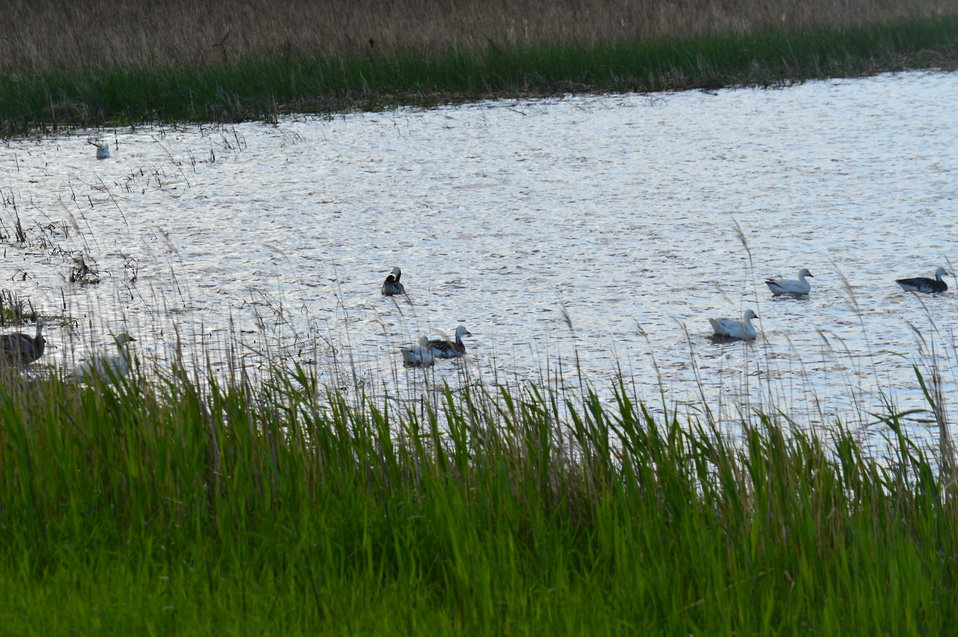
Snow Geese in Sand Lake

Scenery and wildlife at Sand Lake National Wildlife Refuge in South Dakota